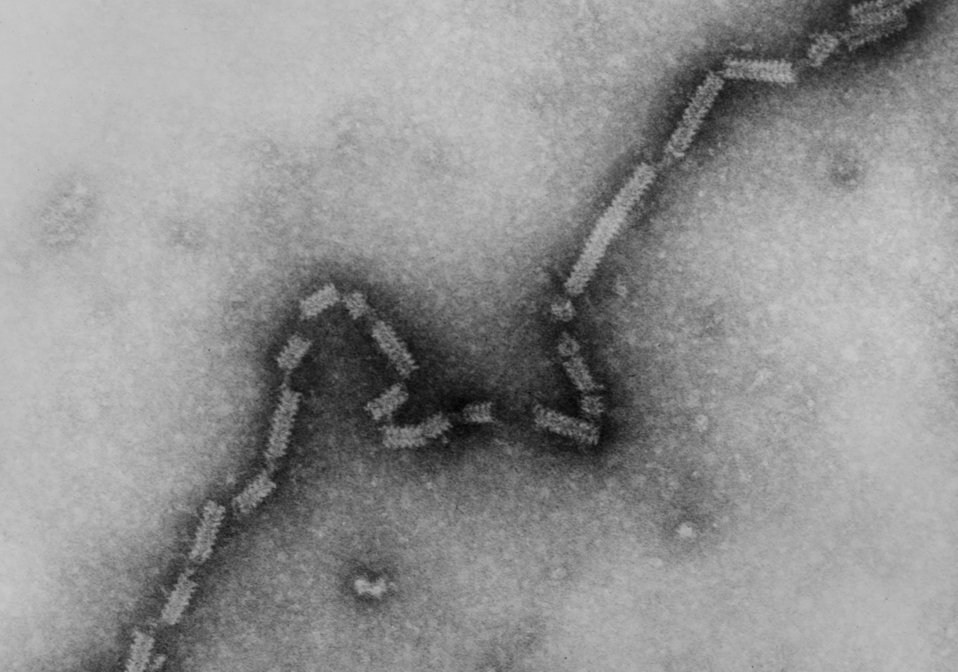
This electron micrograph depicts the paramyxovirus 4A nucleocapsid with its herringbone shaped RNA core.